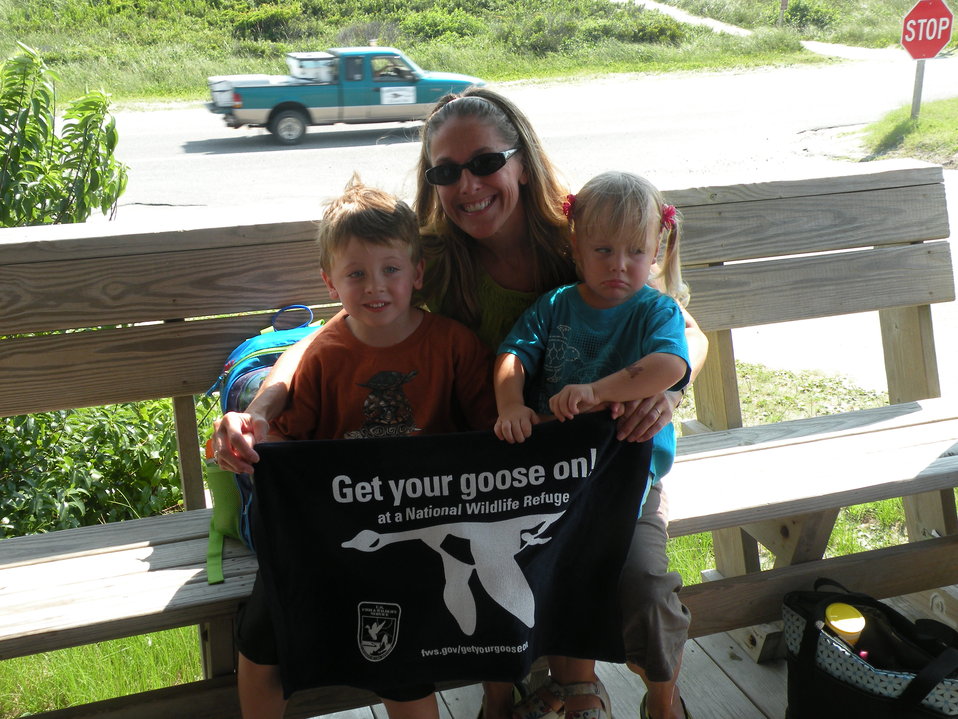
Get Your Goose On!

Outer Banks Mommy and Me group enjoy learning about turtles and Get there Goose on!

Cindy Heffley/USFWS